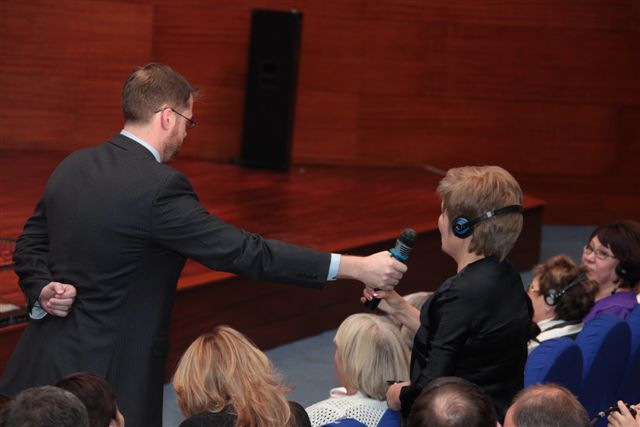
A Student Asks Secretary Clinton a Question

A student asks U.S. Secretary of State Hillary Rodham Clinton a question at the Town Hall on Empowering Civil Society for Central Asia's Future at Eurasian University in Astana, Kazakhstan, on November 30, 2010.